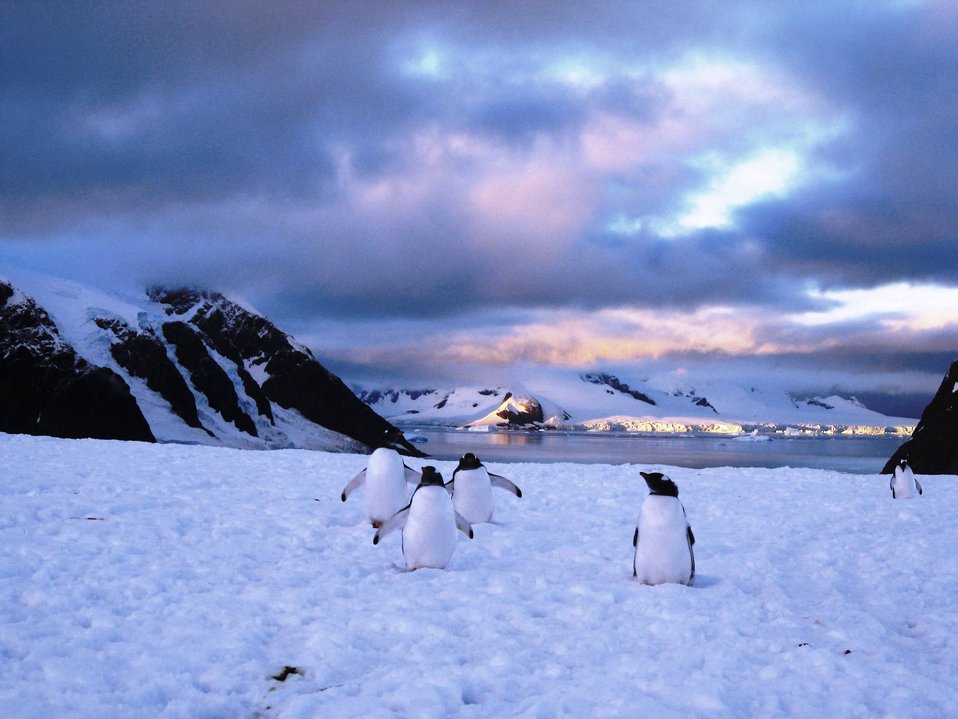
Uploaded by request of Jeanne Litwin

Taken in Danco Island, Antarctic Peninsular

An early morning encounter with gentoo penguins on Danco Island located at the head of the spectacular passage to the Errera Channel, close to the Antarctic Peninsula.